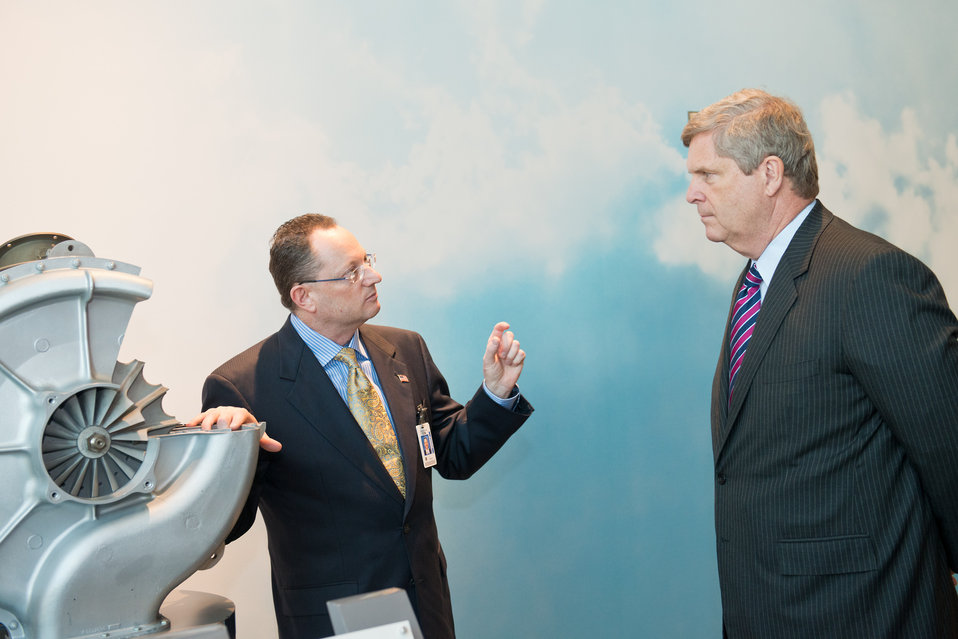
G.E. Aviation Marketing Executive Tom Lodge (left) explains the function of an early model General Electric turbo supercharger to Agriculture Secretary Tom Vilsack at the company’s Learning Centre in suburban Cincinnati, OH on Wednesday, June 27, 2012. Secretary Vilsack was in Ohio to highlight the U.S. Department of Agriculture’s (USDA) collaboration with the Ohio Aerospace Institute, air carriers and producer groups to develop a Midwest-regional approach to providing renewable jet fuel at G.E. Aviation’s Cincinnati-area facilities.